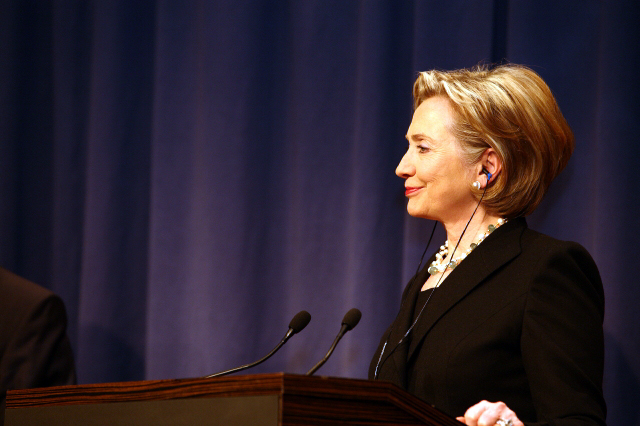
Press Conference With Russian Foreign Minister

Press conference after dinner meeting between U.S. Secretary of State Hillary Rodham Clinton and Russian Foreign Minister Sergey Lavrov in Geneva, Switzerland March 6, 2009.